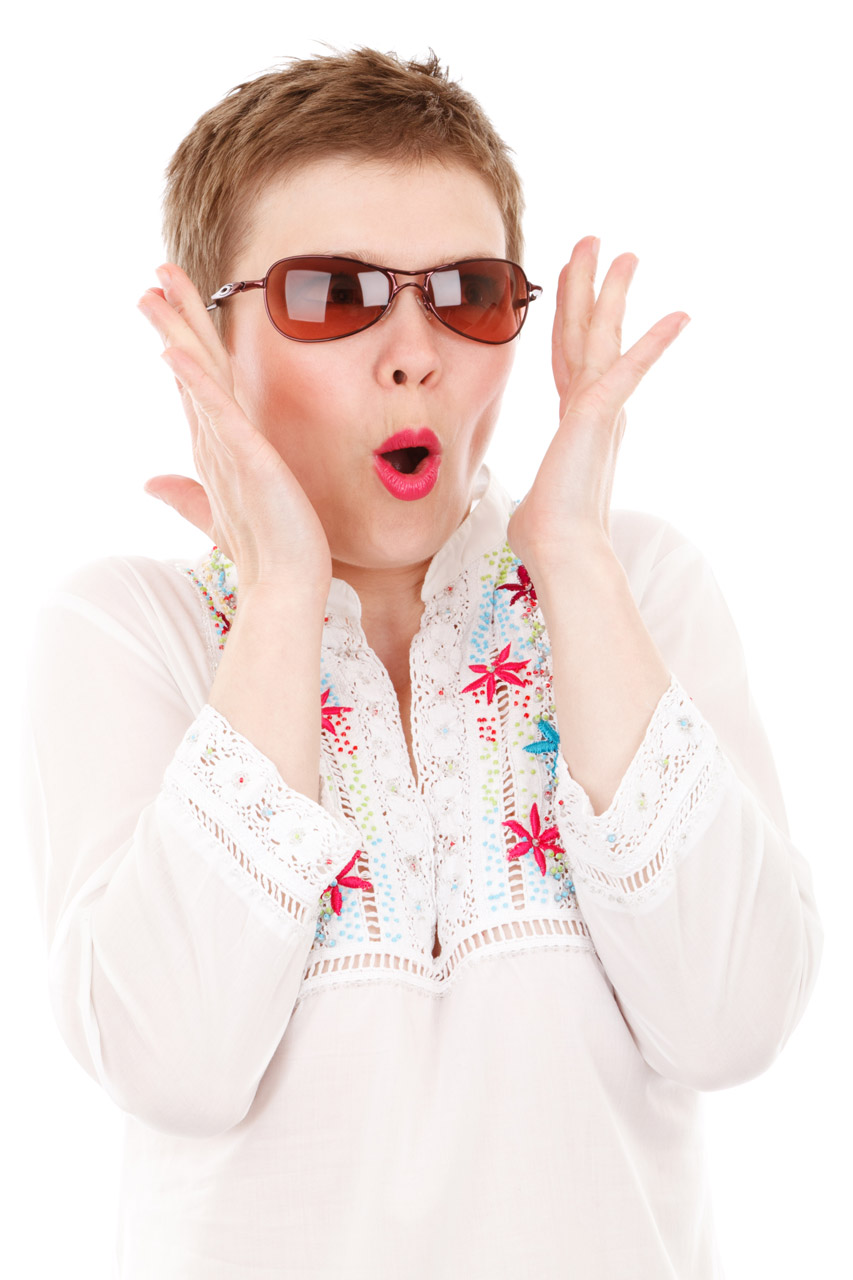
Surprised woman

Surprised young woman with sunglasses isolated on white background.